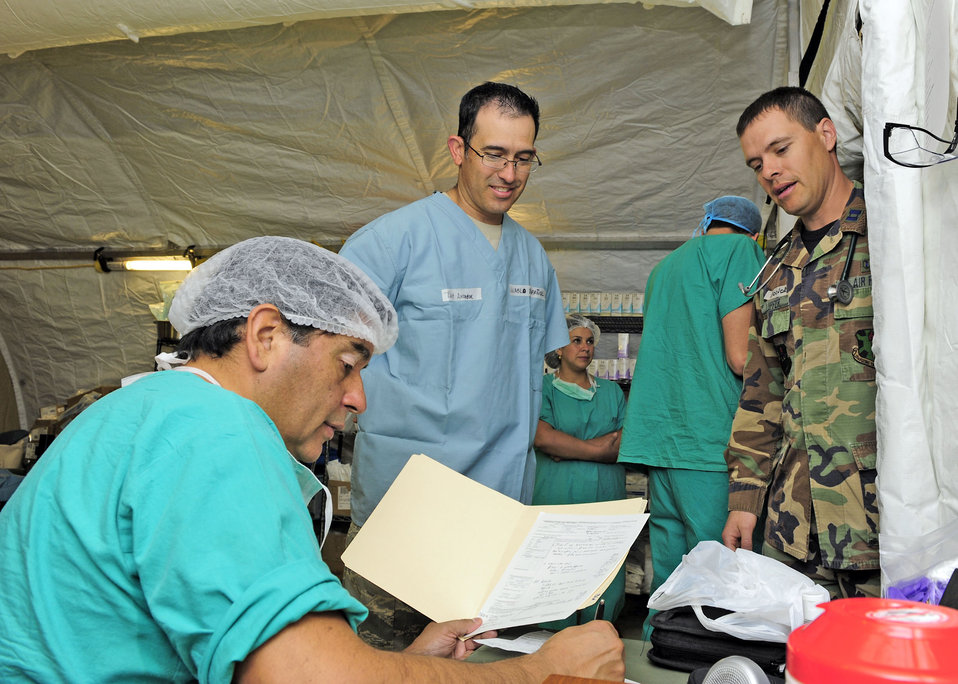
Bridging the language gap

Tech. Sgt. Antonio Andrade (center) translates for a Chilean doctor (left) and Capt. Brian Lupfer (right) after a surgery in the expeditionary hospital March 16, 2010, in Angol, Chile. Sergeant Andrade is a translator for the Air Force Expeditionary Medical Support team here and a dental technician assigned to 336th Dental Squadron at Mountain Home Air Force Base, Idaho. Captain Lupfer is a physician's assistant assigned to the 359th Medical Group at Randolph AFB, Texas.